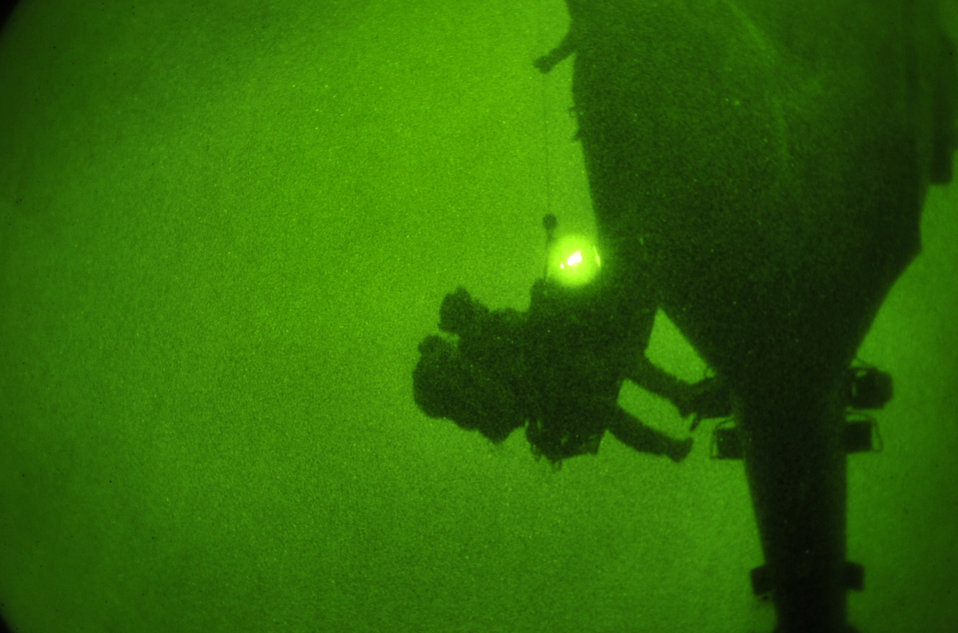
Airmen learn essential skills during joint combat training exercise

Staff Sgt. Jesse Barnes is raised into a hovering helicopter with a simulated wounded victim during joint training July 28, 2010, at Kadena Air Base, Japan. The Airmen are pararescuemen with the 31st and 33rd Rescue Squadrons.